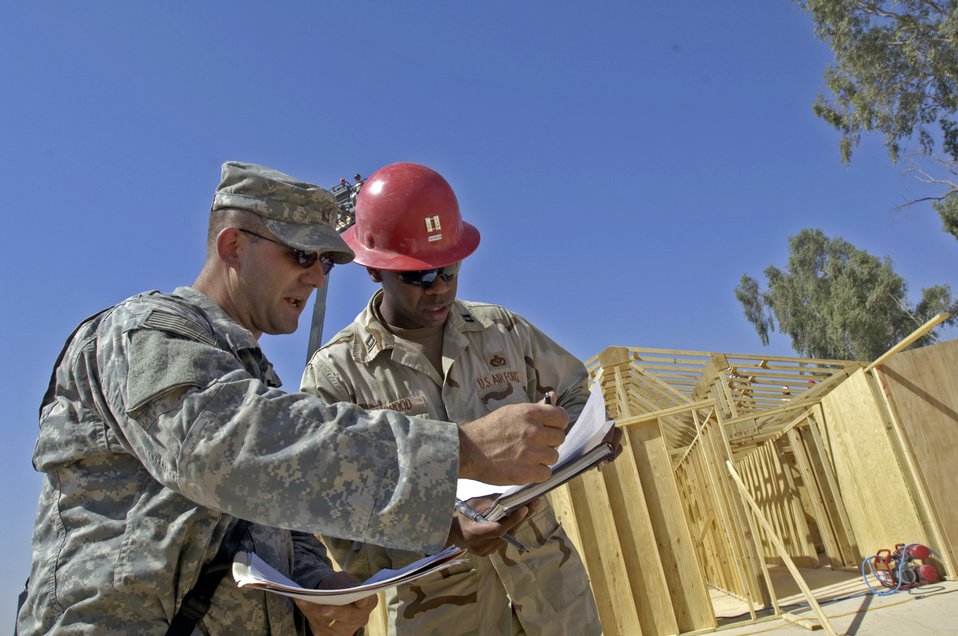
RED HORSE Airmen support Army in southern Baghdad

Capt. Kelvin Haywood (right) signs for a shipment of 17 trailers full of supplies from Army Staff Sgt. Chad Kollar June 22 at Forward Operating Base Kalsu, Iraq. Captain Haywood is the engineering flight commander with the 557th Expeditionary RED HORSE Squadron and Sergeant Kollar is logistical convoy commander with the 1207th Transportation Company attached to the 82nd Airborne Brigade. Sergeant Kollar is deployed from the Rhode Island Army National Guard and is based in Talil, Iraq. Captain Haywood is an Air Force reservist deployed from Nellis Air Force Base, Nev. He is in charge of the Rapid Engineer Deployable Heavy Operational Repair Squadron Engineers, or RED HORSE, Airmen who are forward deployed from Balad Air Base, Iraq and tasked with building four tactical operations centers for the Army's 2nd Brigade combat team, 3rd Infantry Division headquartered here. The 2/3 ID are currently running their operations out of tents. The Air Force RED HORSE unit was requested by the Army to come into this